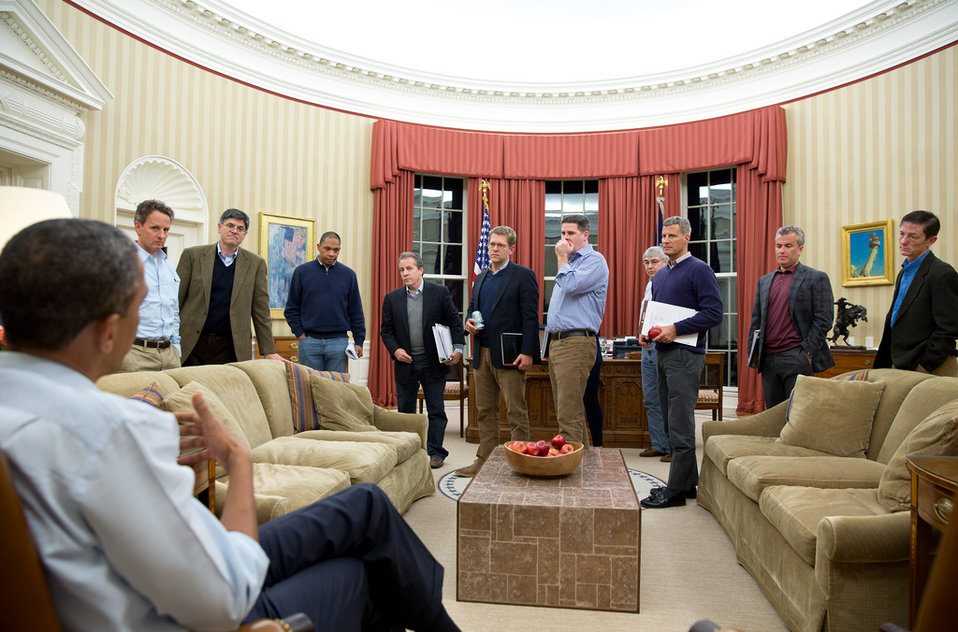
Secretary Geithner participates in Oval Office meeting

'In the Oval Office, the President meets with senior advisors to discuss the ongoing fiscal cliff negotiations.'